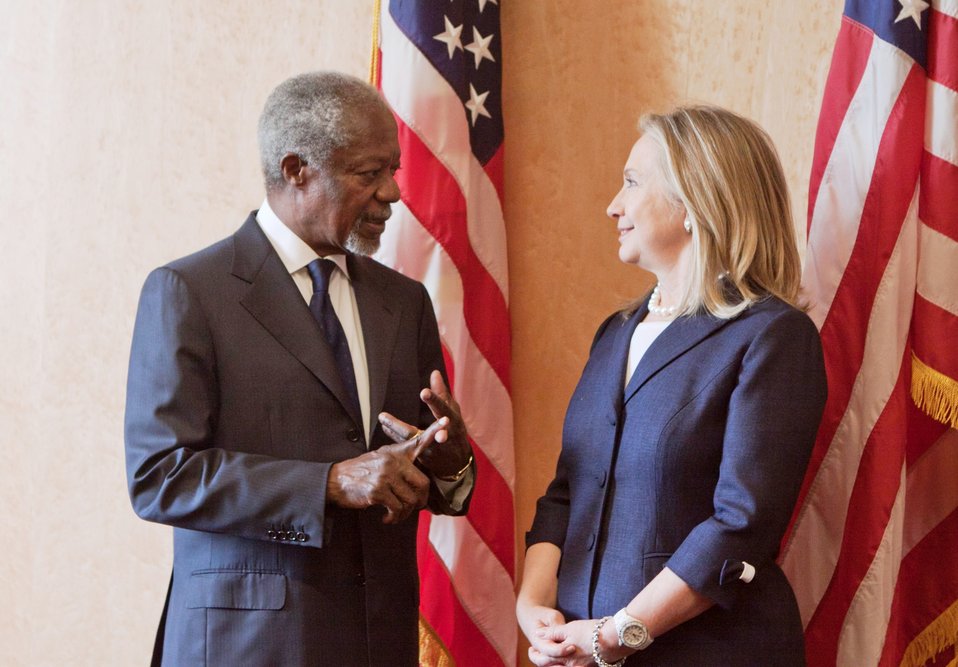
Secretary Clinton Meets With Joint Special Envoy Kofi Annan

U.S. Secretary of State Hillary Rodham Clinton meets with Joint Special Envoy Kofi Annan at the United Nations Office at Geneva on June 30, 2012, for the Meeting of the Action Group for Syria.